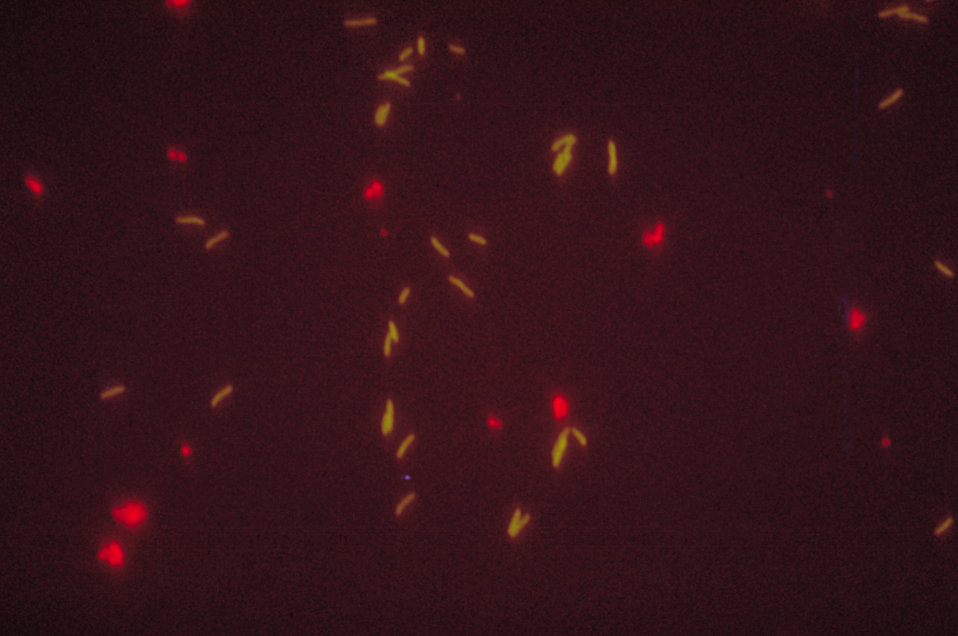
Photomicrograph of Legionella pneumophila using indirect FA staining technique, and fluorescein antihuman label.